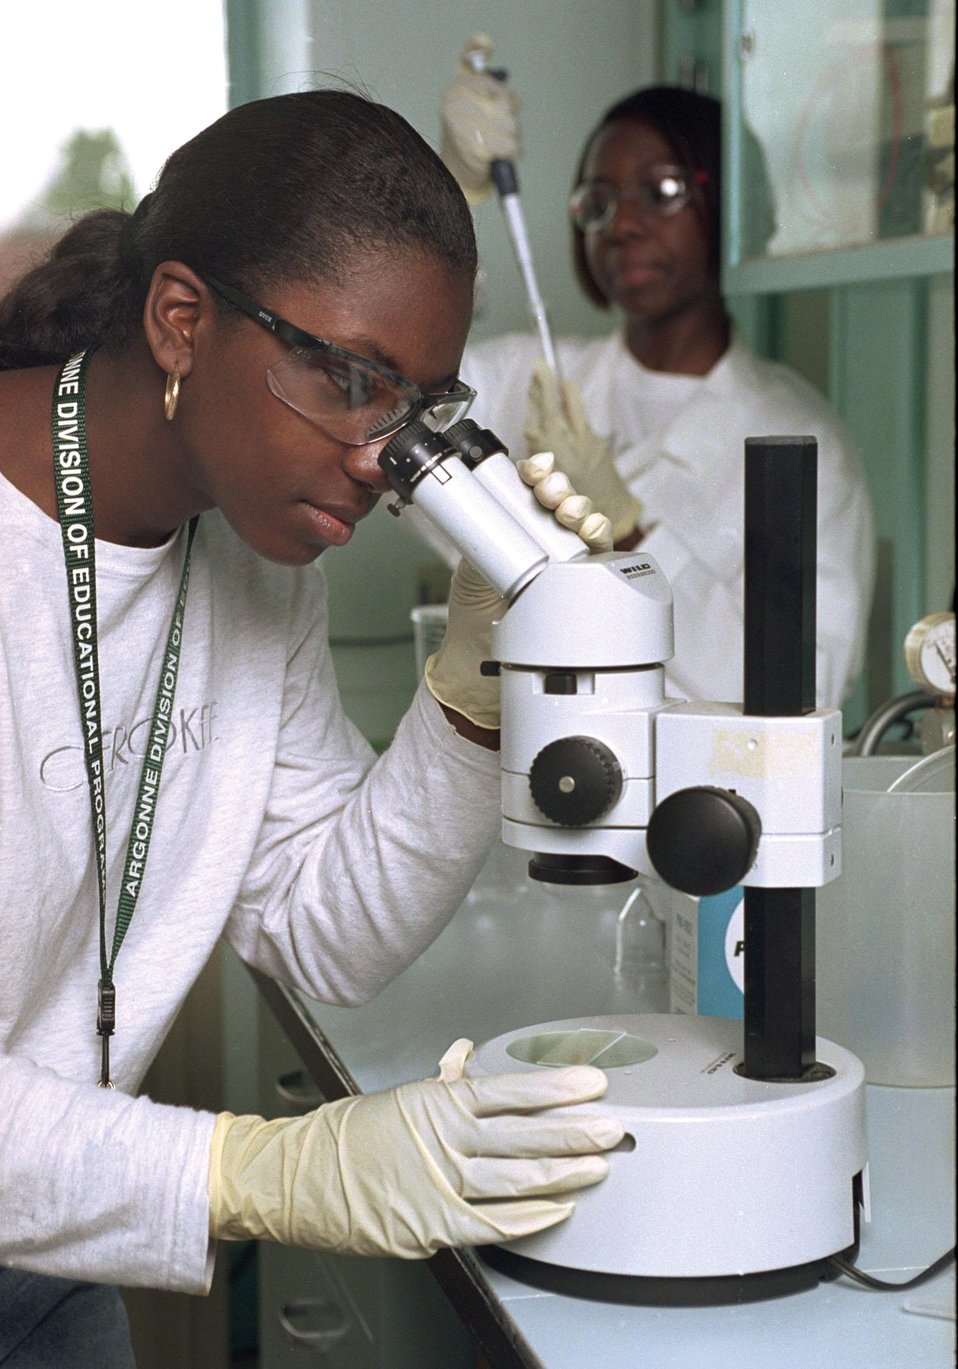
STUDENTS FROM NORTH CAROLINA AGRICULTURAL AND TECHNICAL STATE UNIVERSITY AT ARGONNE NATIONAL LABORATORY.

THE STUDENTS ABOVE PARTICIPATED IN THE FACULTY AND STUDENT TEAMS PROGRAM AT ARGONNE IN THE SUMMER OF 2002. THE PROGRAM FOSTERS COLLABORATION BETWEEN FACULTY AND LAB SCIENTISTS WHILE PROVIDING HANDS-ON RESEARCH TRAINING FOR STUDENTS.